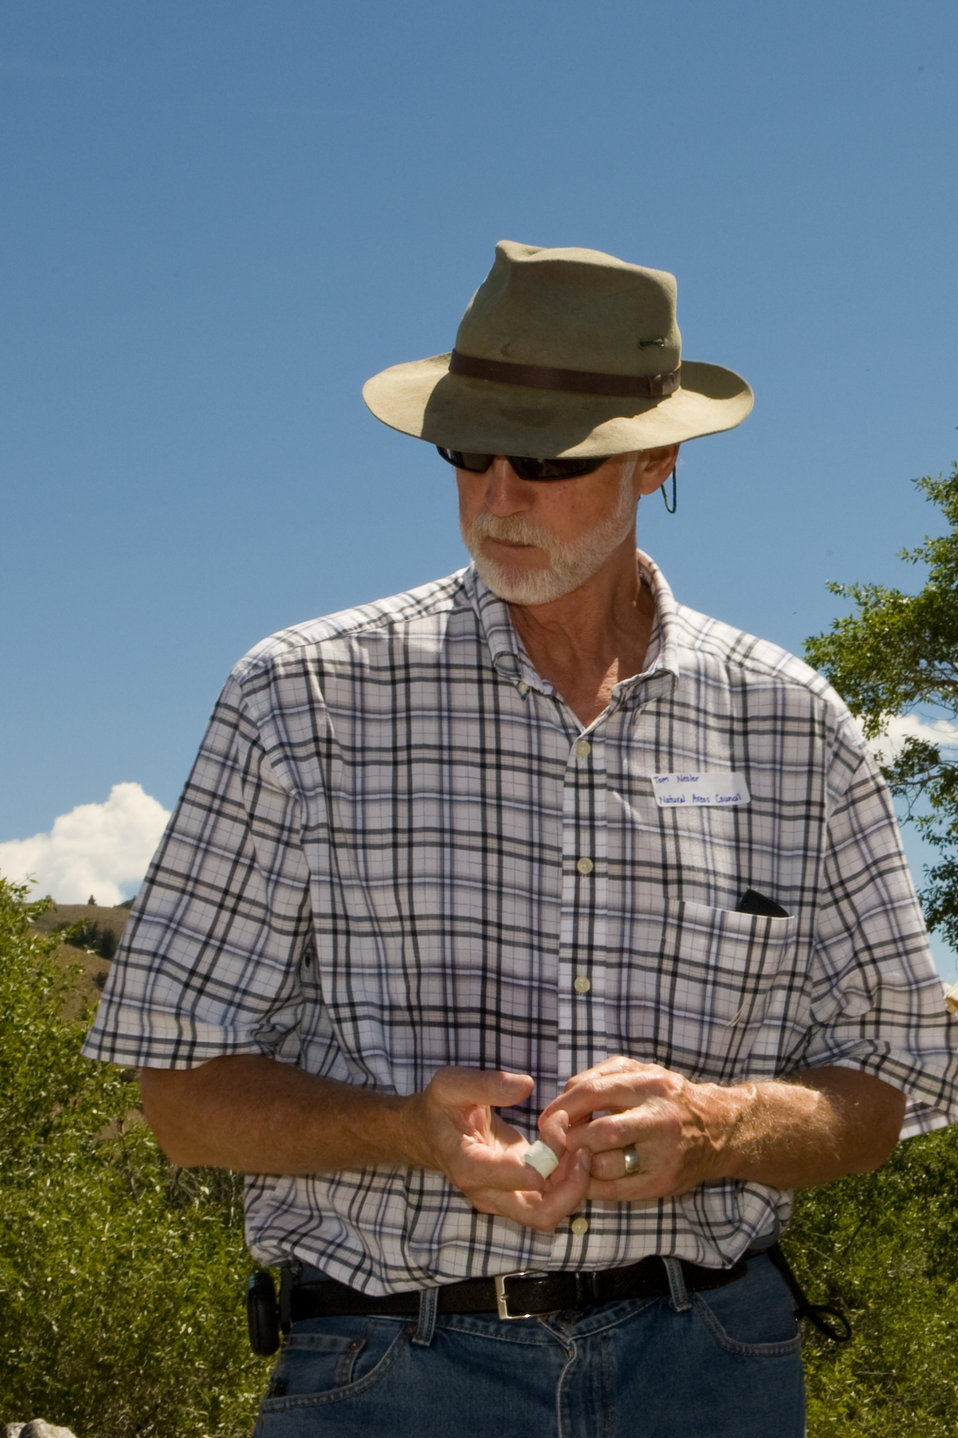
Colorado Rare Plant Conservation Initiative

The Colorado Rare Plant Conservation Initiative (RPCI) is a partnership of 23 statewide and regional agencies, private organizations, and academic institutions working to conserve 121 rare plants in Colorado. As part of these efforts the group developed the Colorado Rare Plant Conservation Strategy, developed Best Management Practices to reduce energy development impacts, addressed climate change, and developed focused strategies for the conservation of individual species at eight priority landscapes. The group has also worked to coordinate volunteer efforts for plant conservation across the state.